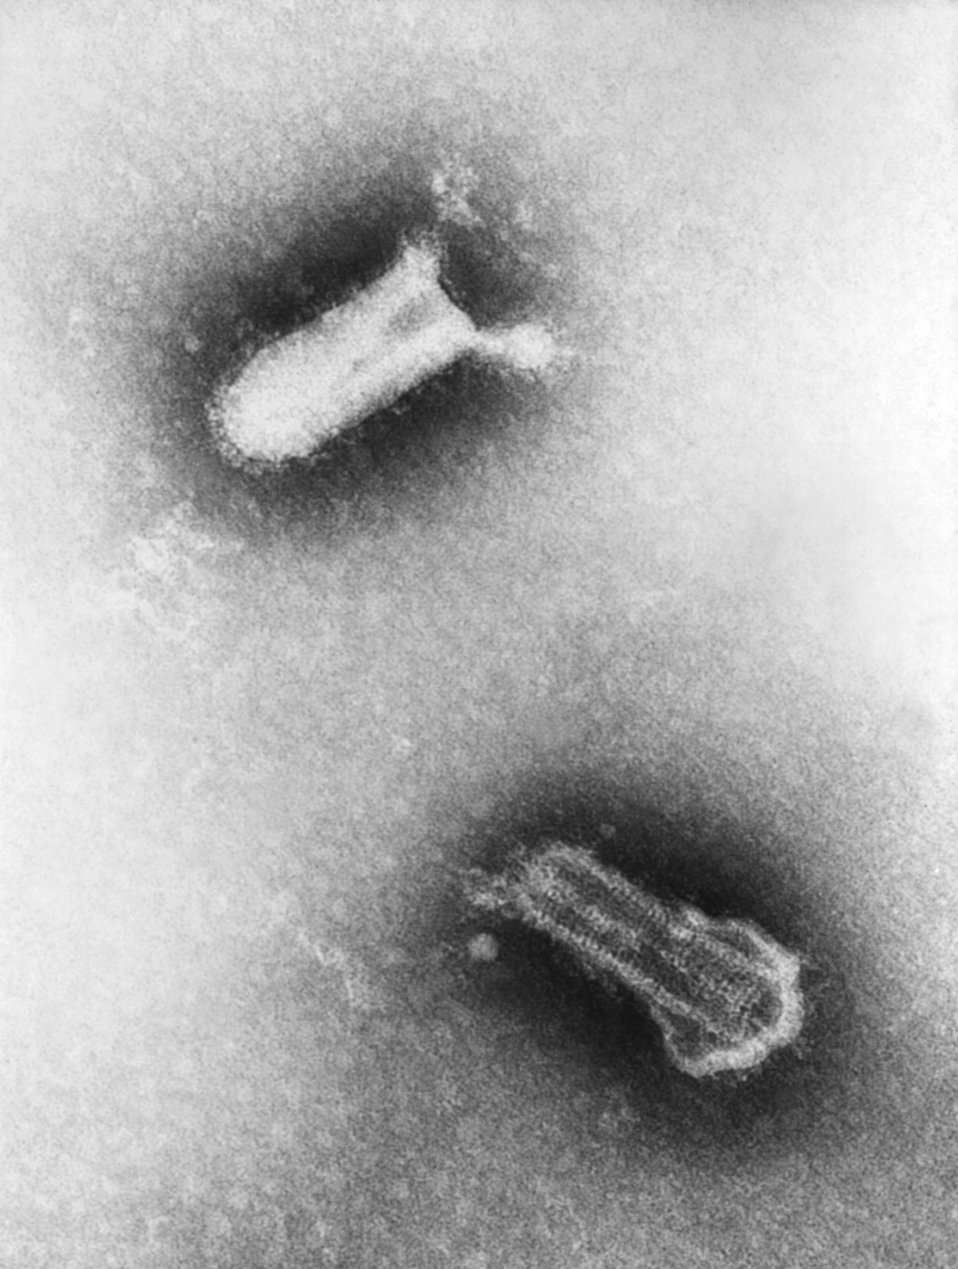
This negatively-stained transmission electron micrograph (TEM) revealed the presence of two Piry virus virions. Note the 'bullet-like' shape of the small 155nm x 162nm virions. Normally, under electron microscopic examination, the virions are observed as being discoidal or spheroidal in shape, and only rarely as bullet-shaped, as was the case here.